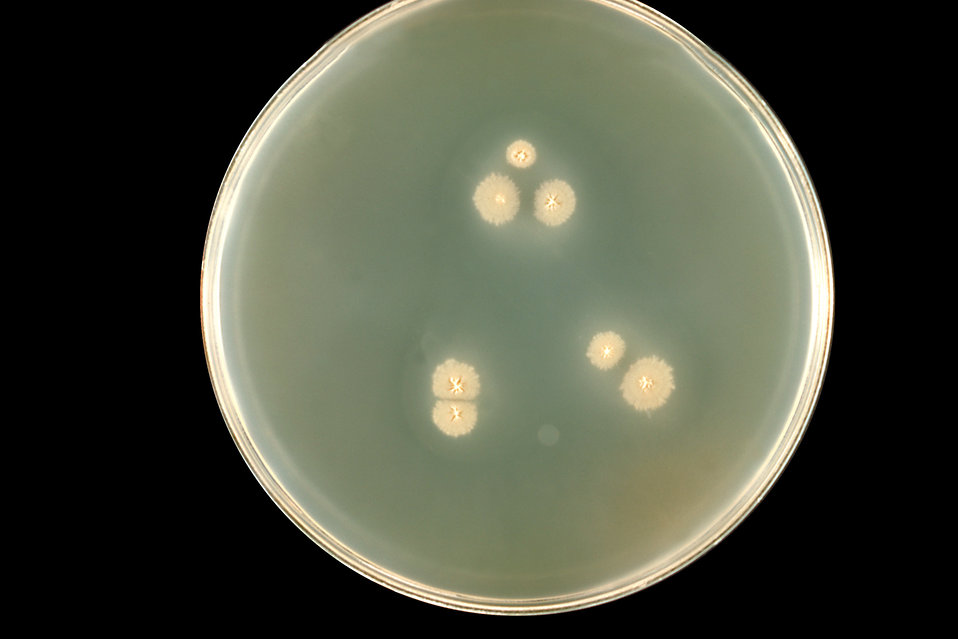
This agar plate culture of the fungus Sporothrix schenckii grown at 37�C.